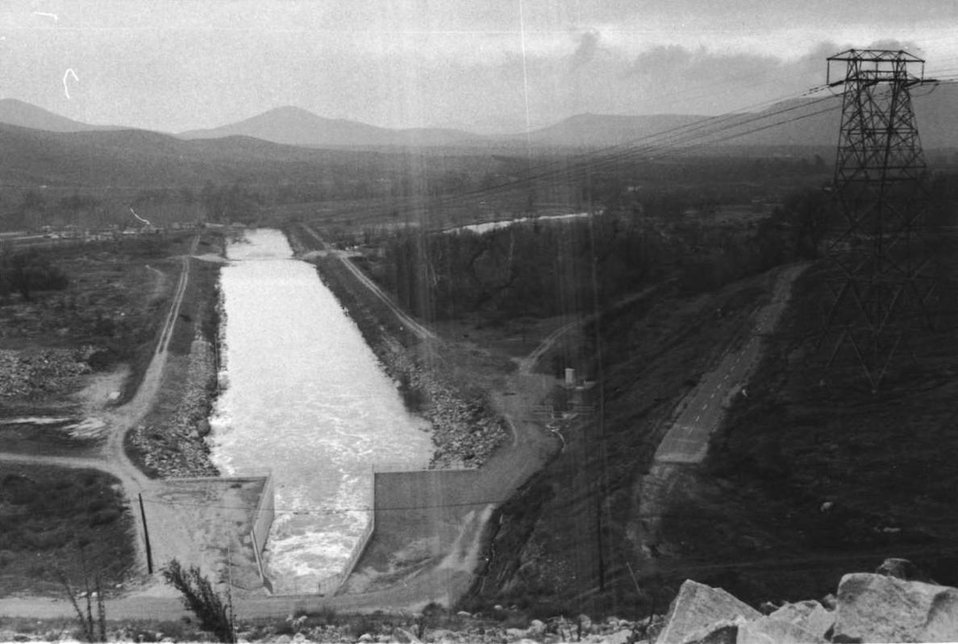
Success Dam

A historical view looking southwest of the outlet for Success Dam, located near Porterville, Calif., Dec. 2, 1966. The U.S. Army Corps of Engineers Sacramento District completed construction of Success Dam in 1961 and the reservoir provides flood risk management, water storage and recreational benefits to the local area.